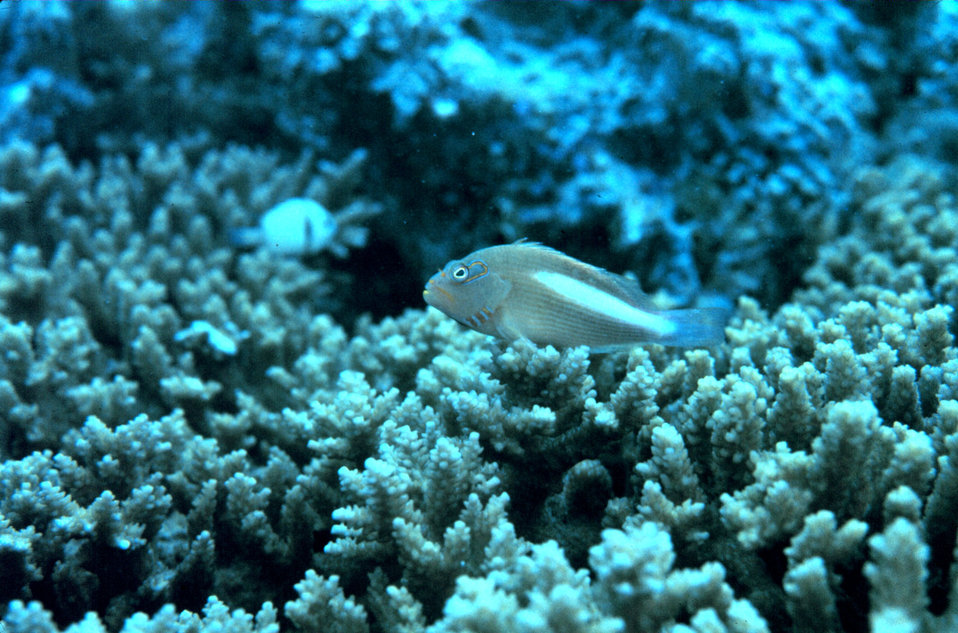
Paracirrhites sp. Arceye hawkfish